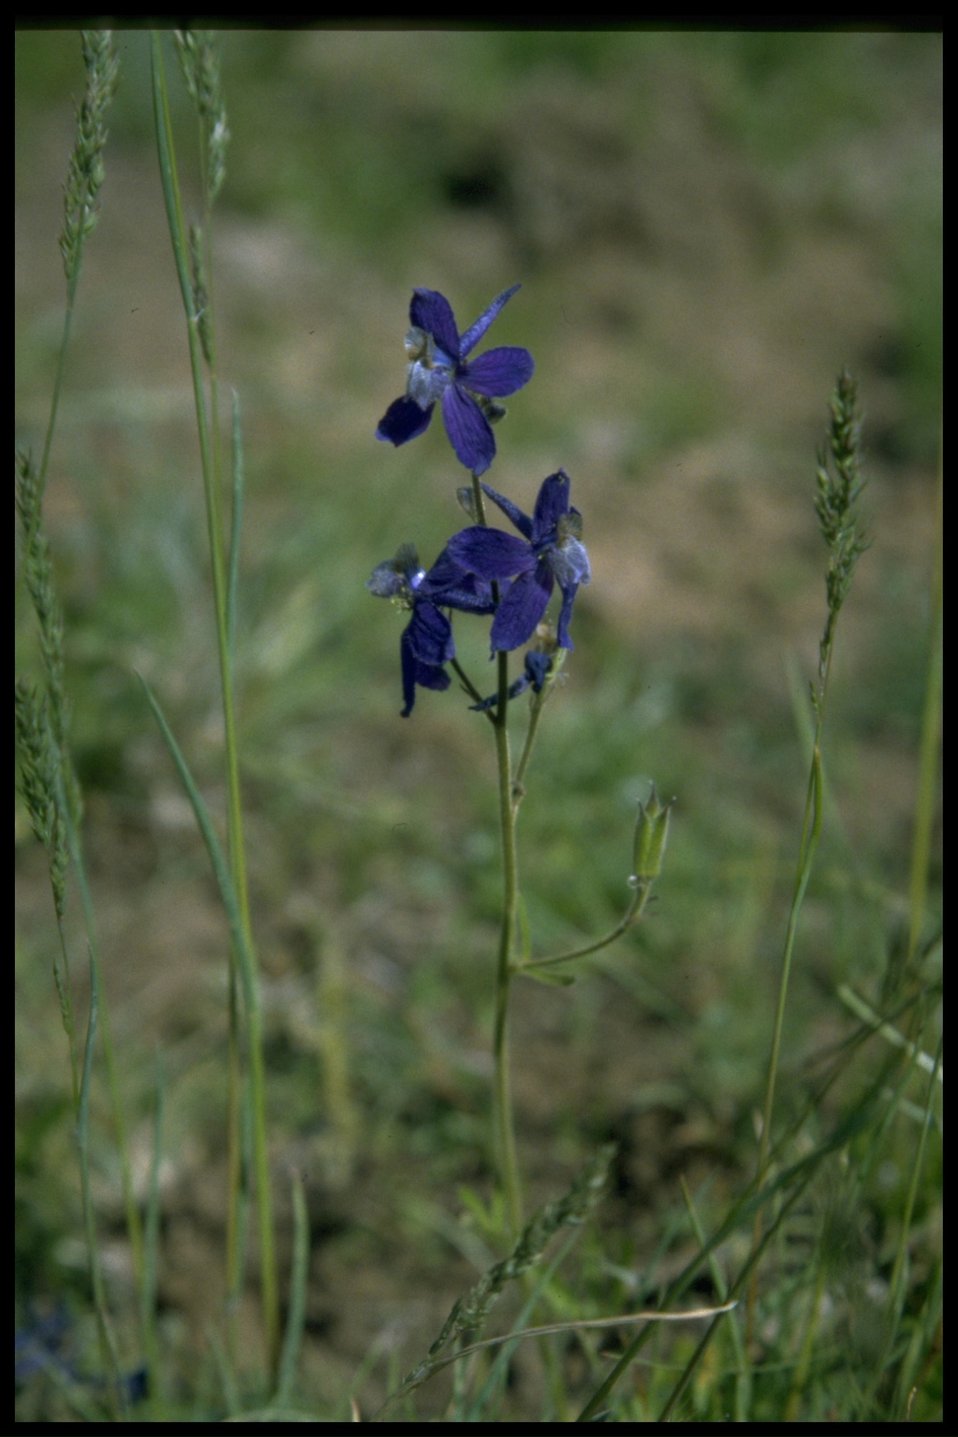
Medium shot of Larkspur wildflower.